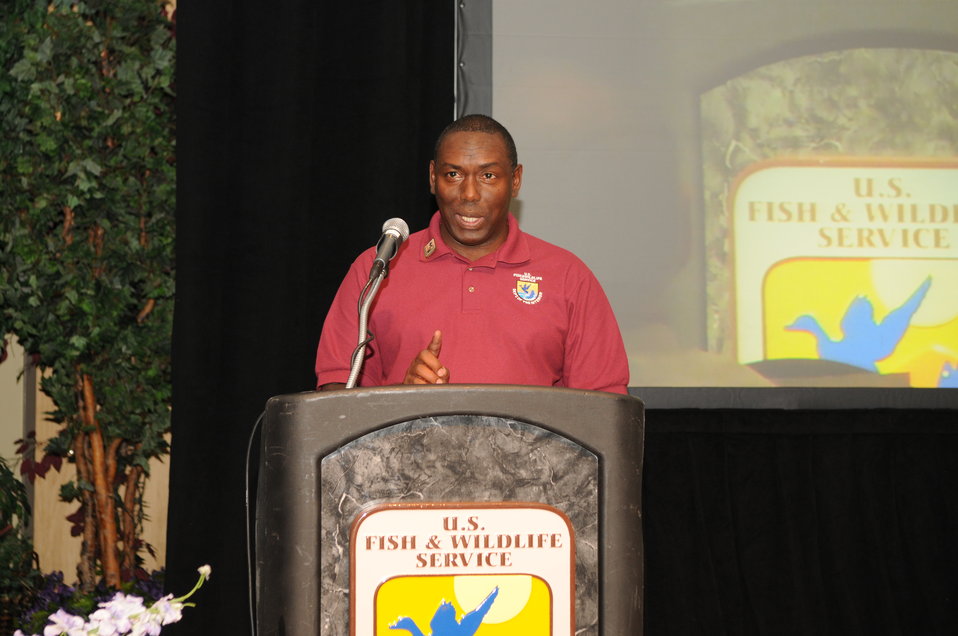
Opening Remarks

The U.S. Fish & Wildlife Service sponsored the 2012 Federal Duck Stamp Art Contest September 28 and 29 in Ogden, Utah, at Weber State University. A panel of five judges was responsible for choosing the art work used to design the 2013-2014 Migratory Bird Hunting and Conservation Stamp.